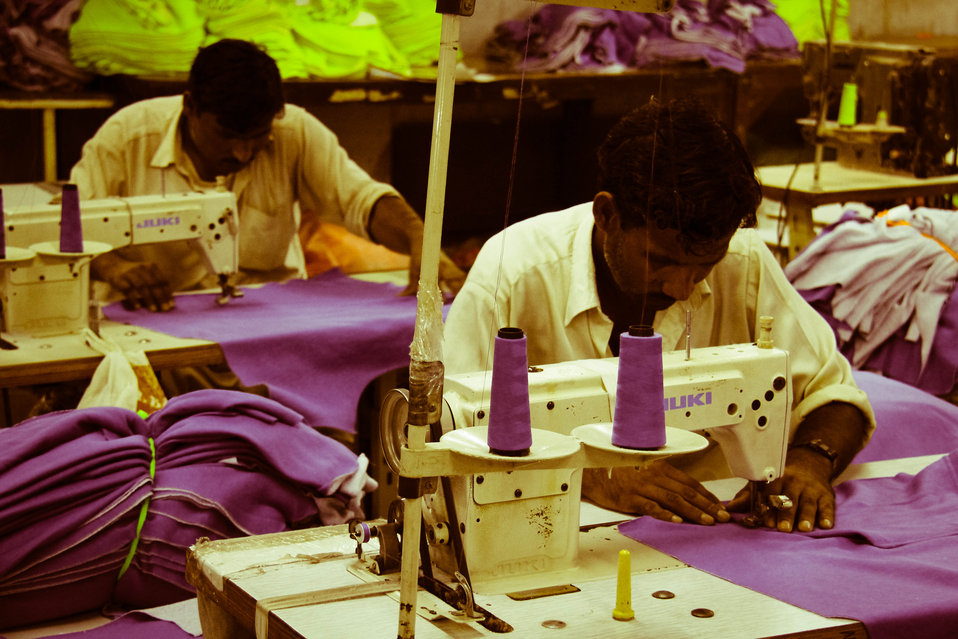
USAID's Firms Project

Two workers who benefited from productivity training offered by the project